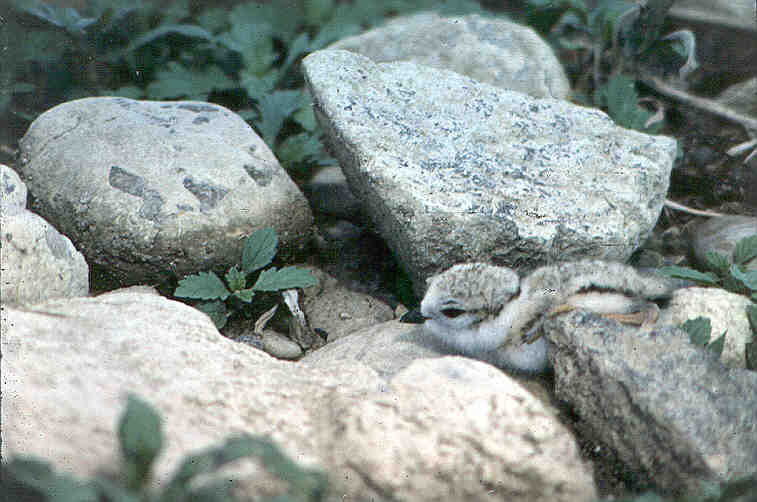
Piping plover chick on Nelson Reservoir, Bowdoin WMD